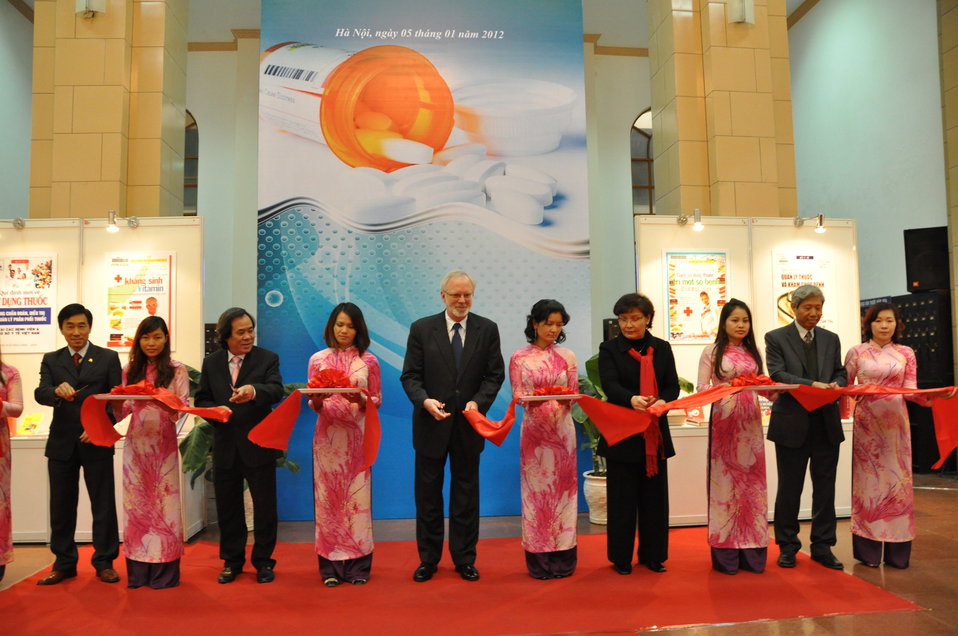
U.S. Ambassador David Shear opens safe medicine exhibition in Hanoi

Safe Medicine Exhibition